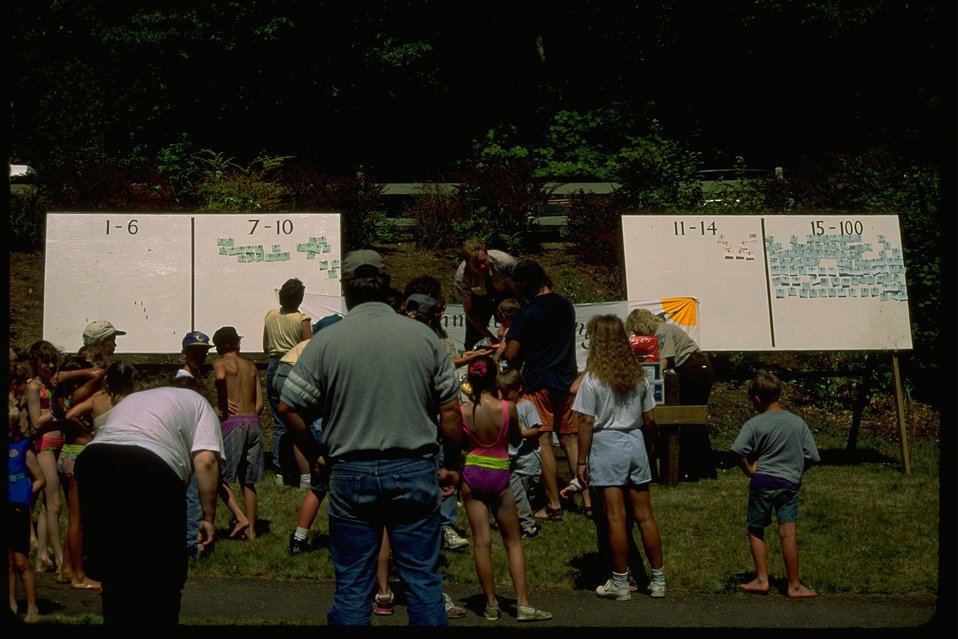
Loon Lake fishing derby.